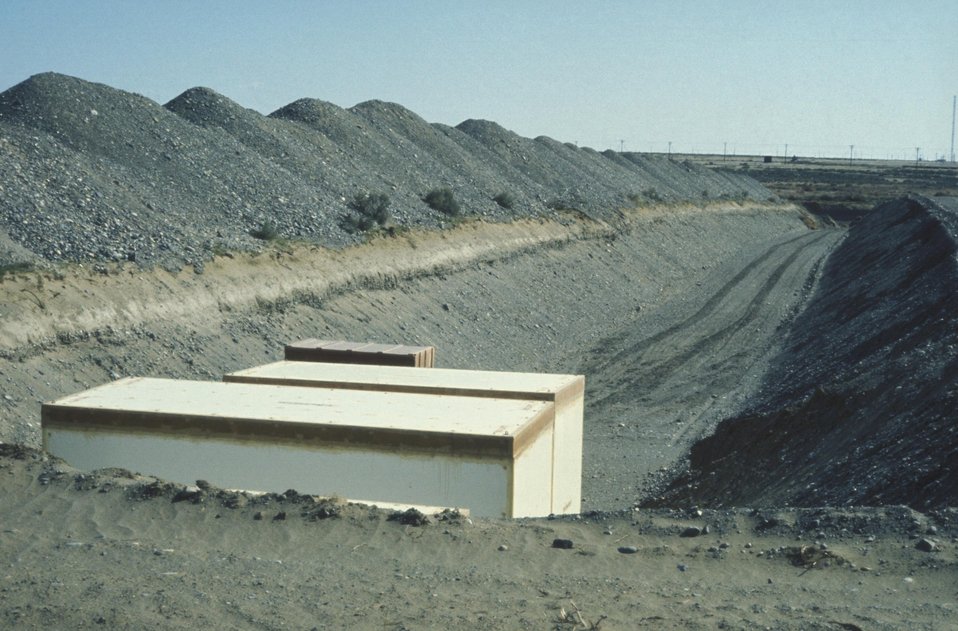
LOW-LEVEL NUCLEAR WASTE BURIAL GROUNDS AT HANFORD.

THE PRODUCTION OF NUCLEAR MATERIALS RESULTS IN SOLID WASTES,SUCH AS WORN-OUT EQUIPMENT AND PIPING, THAT REQUIRE SAFE HANDLING AND DISPOSAL. THESE WASTES ARE PACKAGED AND BURIEDIN SPECIALLY PREPARED TRENCHES. BURIAL GROUNDS ARE ROUTINELY MONITORED AND STUDIES HAVE SHOWN THAT NO RADIOACTIVE MATERIALS HAVE MIGRATED FROM THESE TRENCHES. VERY LARGE RADIOACTIVE PIECES OF EQUIPMENT THAT CANNOT BE PACKAGED FOR BURIAL ARE STORED ON OLD RAILROAD FLAT CARS IN TUNNELS CONNECTED TO THE FUEL REPROCESSING PLANT. THIS EQUIPMENT MAY BE REMOVED LATER FOR DECONTAMINATION AND SALVAGE OR FINAL DISPOSAL.